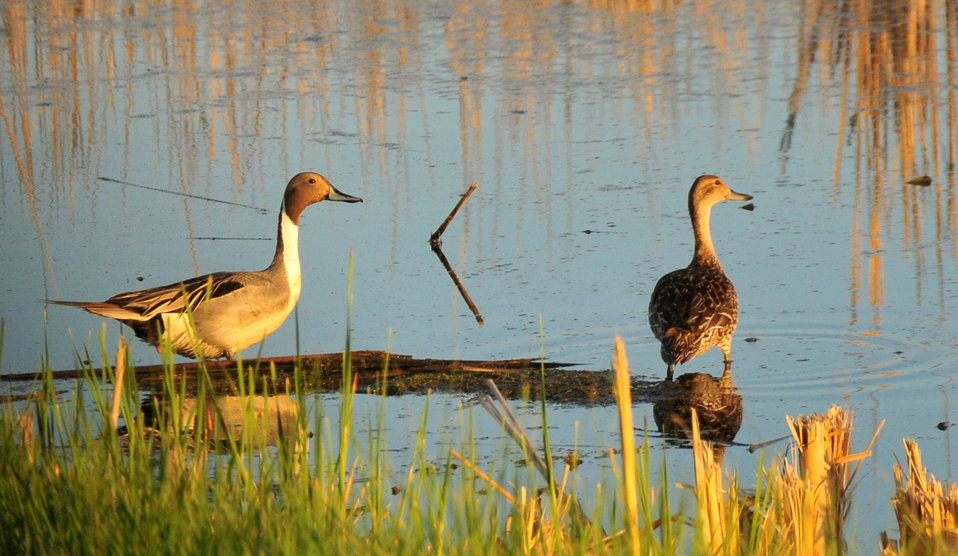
Pintail Drake and Hen on Sand Lake WMD

A pair of pintails on a seasonal wetland in the Sand Lake WMD.